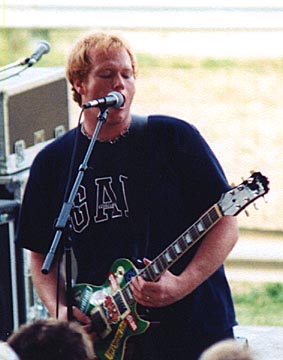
American rock musician Jamie Rowe performing live.